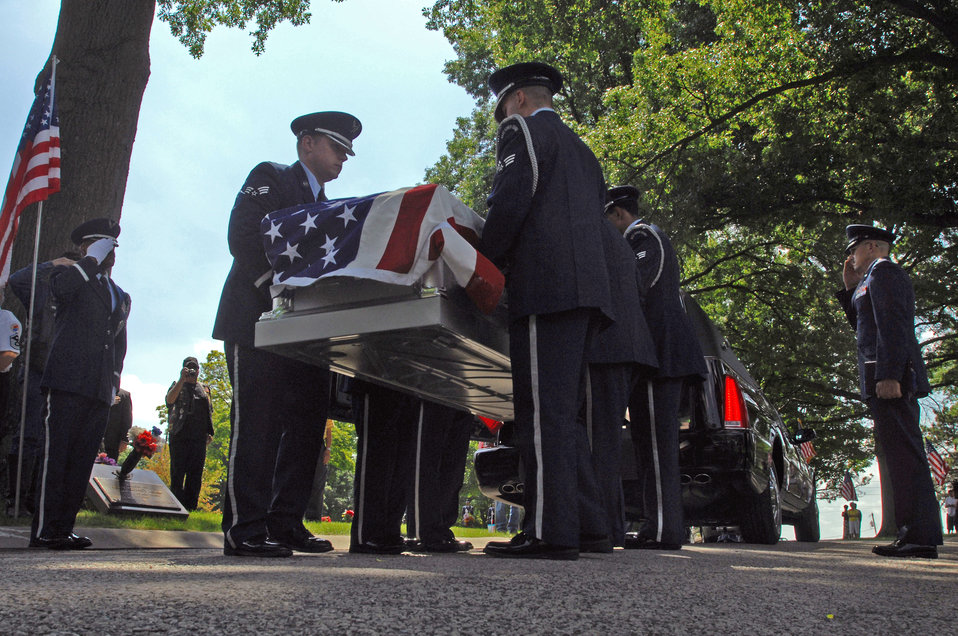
War hero brought home, laid to rest after 30 years MIA

Airmen from the Whiteman Air Force Base Honor guard remove Chief Master Sgt. Quincy Adam's coffin from a hearse in preparation for his burial July 27 at Chapel Hill Memorial Cemetery in Kansas City, Kan. Chief Adam is a Vietnam War veteran who was missing in action for more than 40 years. Chief Adam's remains were discovered in Southeast Asia, and he was finally brought home to be laid to rest, giving his family closure in their lives.